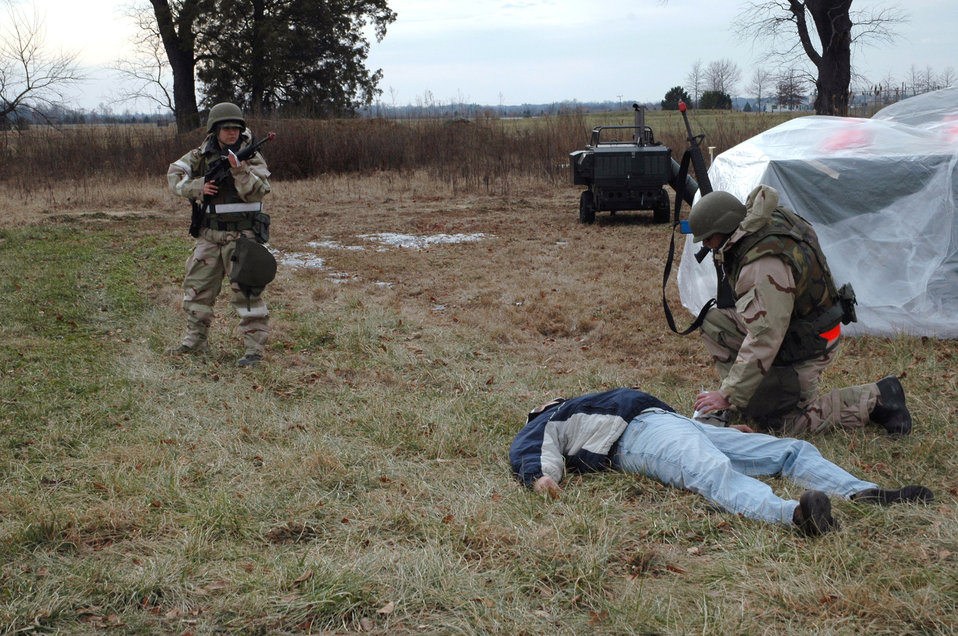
Dover exercise tests Airmen's combat environment skills

An Airman stands guard as a fellow Airman administers auto injectors to a simulated wounded servicemember during Exercise Haunted House Battle Ax Jan. 7 at Dover Air Force Base, Del.